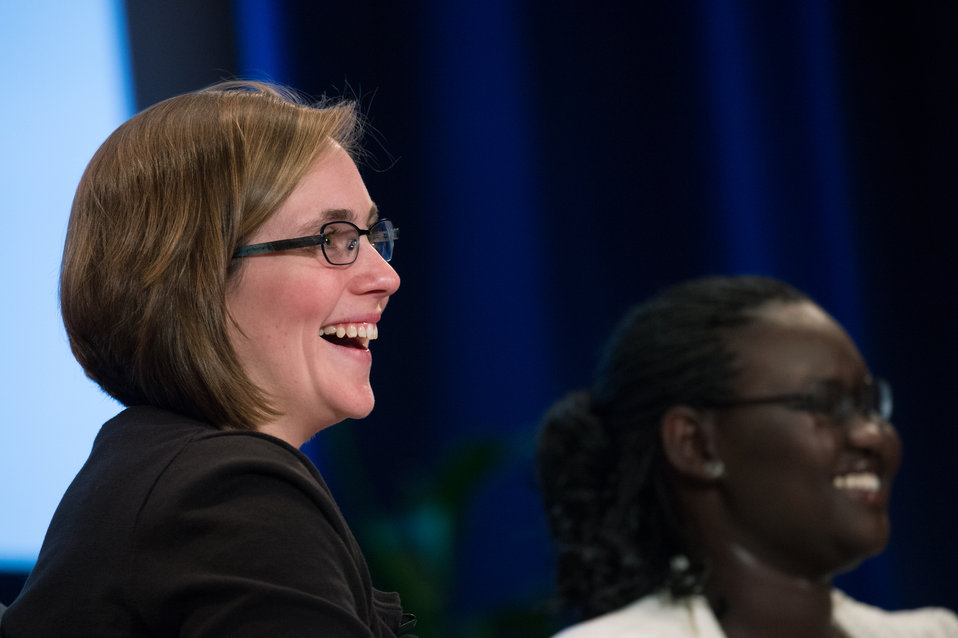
The World Food Prize Foundation Iowa and Midwest Education Programs Director Catherine Swoboda moderates the discussion panel titled 'I am Dr. Borlaug's Vision - I Can Make a Difference', at the Borlaug Symposium commemorating the late Dr. Norman E. Borlaug's 100th Birthday hosted by the U. S. Department of Agriculture (USDA) in the Jefferson Auditorium of USDA in Washington, D.C. on Tuesday, Mar. 25, 2014. The symposium highlighted current efforts addressing global hunger.